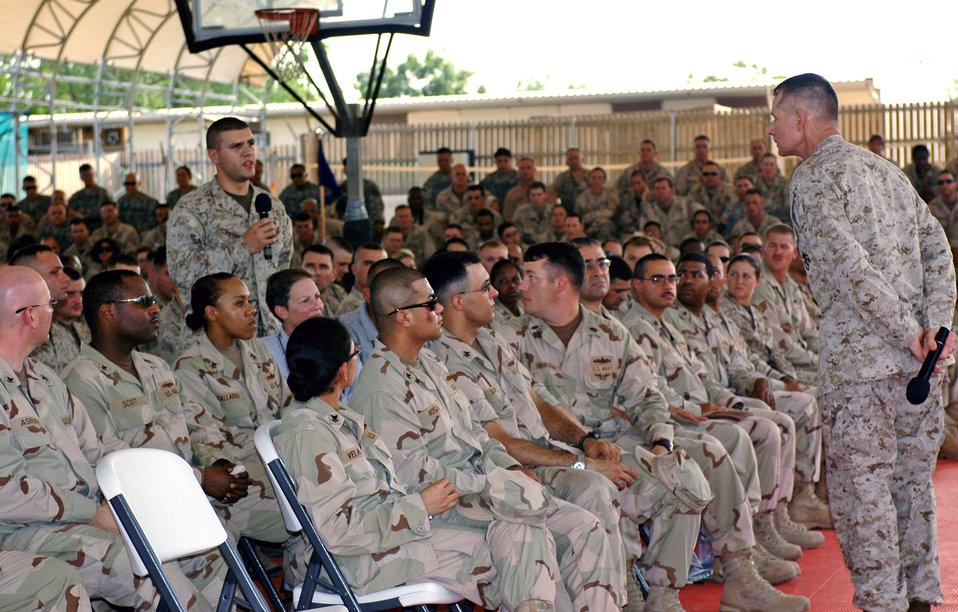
Gen. Pace visits servicemembers in Djibouti

Chairman of the Joint Chiefs of Staff Marine Gen. Peter Pace listens to Marine Lance Cpl. Anthony Comforti ask a question during a Town Hall Meeting Aug. 14 at Camp Lemonier, Djibouti. The general answered questions, shook hands and talked with servicemembers during his morale visit to Camp Lemonier. Through a humanitarian mission of capacity building and military training to help Africans help themselves, Combined Joint Task Force - Horn of Africa members conduct operations such as well-drilling, school construction, medical and veterinary civic action programs and military-to-military training.